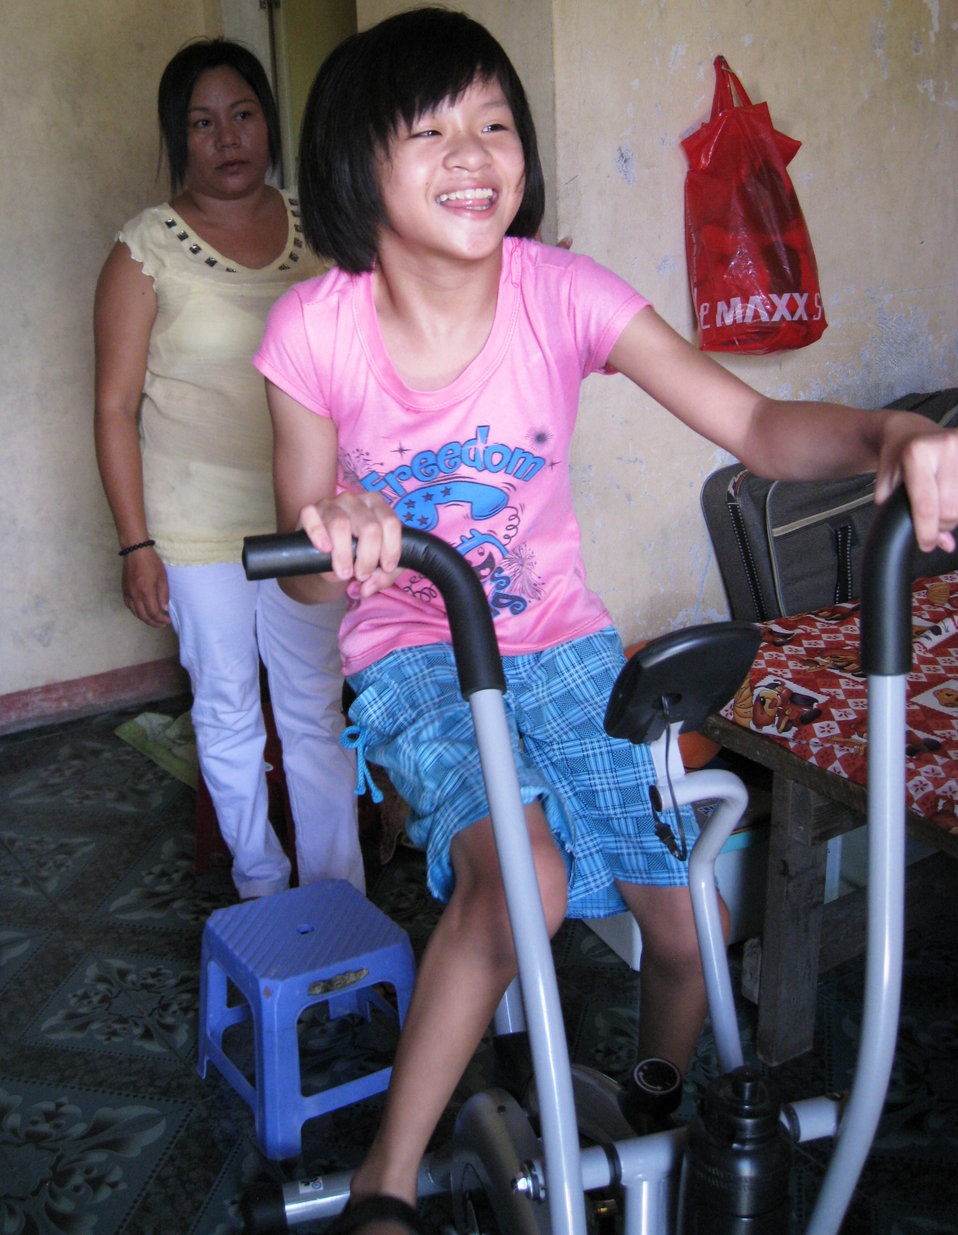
USAID supports rehabilitation for persons with disabilities in Danang.

Danang, June 10, 2013.